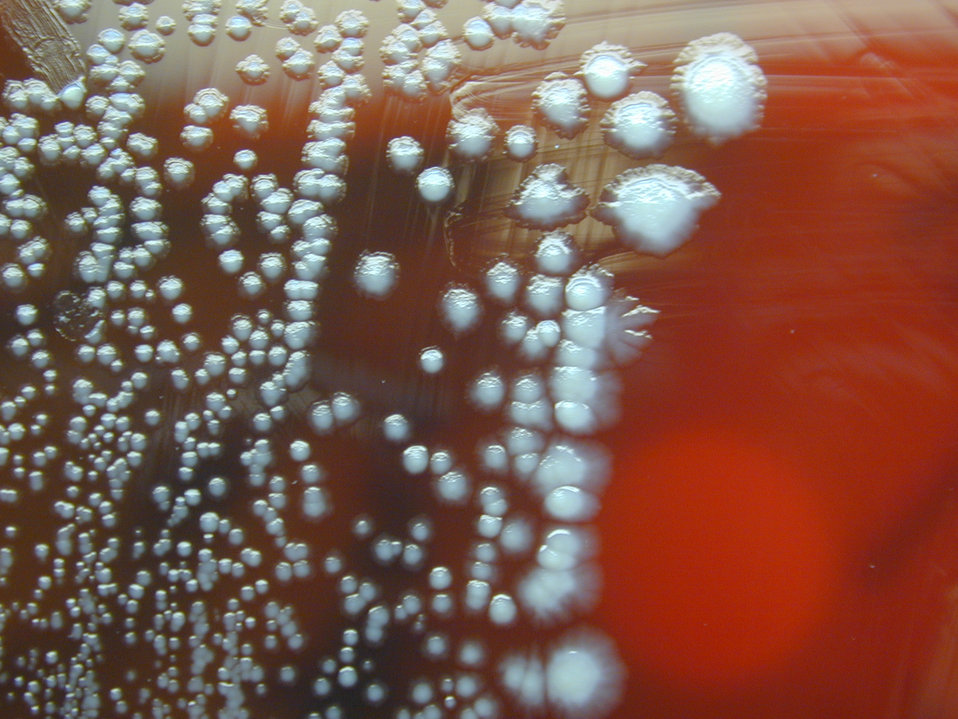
Yersinia pestis on Sheep Blood Agar, 72hrs.